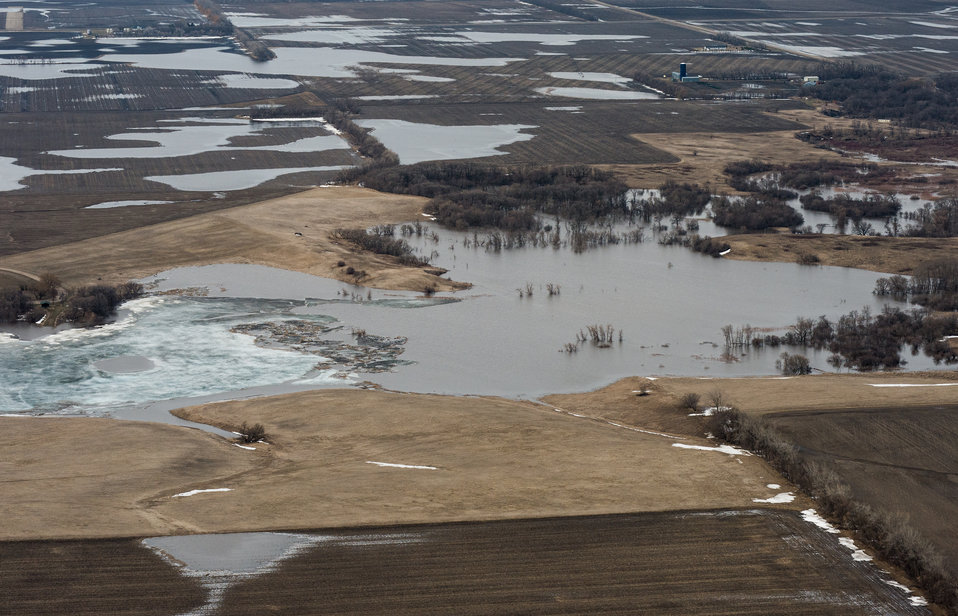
Fordville Dam in Grand Forks County, ND, part of the Red River basin, on Wednesday, May 1, 2013. To learn about the Red River Basin Initiative, see www.mn.nrcs.usda.gov/news/features13/RRBI.html.